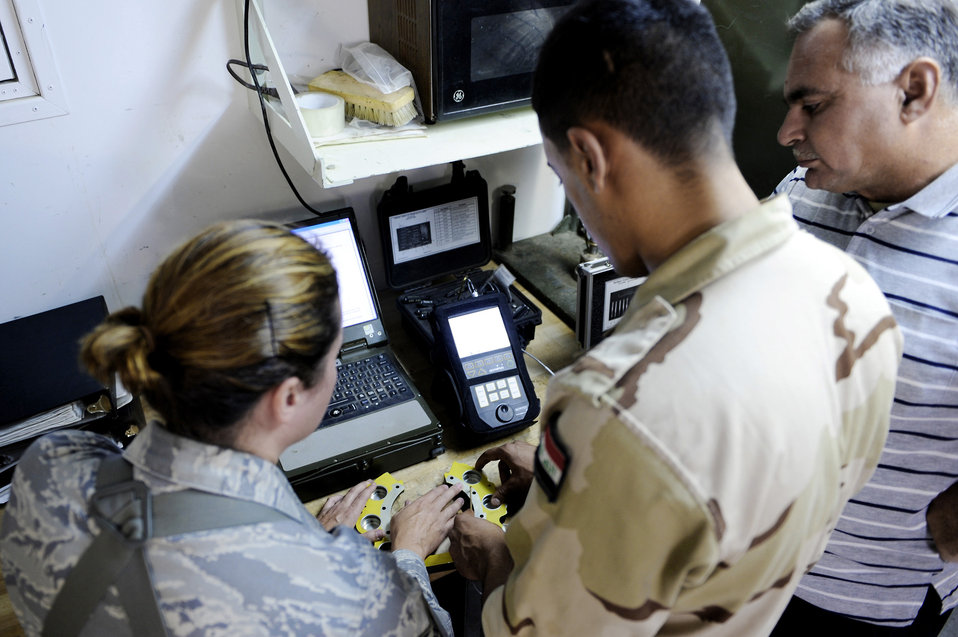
Airmen assist Iraqis with maintenance training

Tech. Sgt. Andrea Walton assists an Iraqi air force maintenance student using specialized tools to find microscopic cracks and flaws in aircraft parts during a training visit to the Army's NDI backshop July 13 at Taji Air Base, Iraq. Sergeant Walton is a nondestructive inspection instructor with the 721st Air Expeditionary Advisory Squadron.